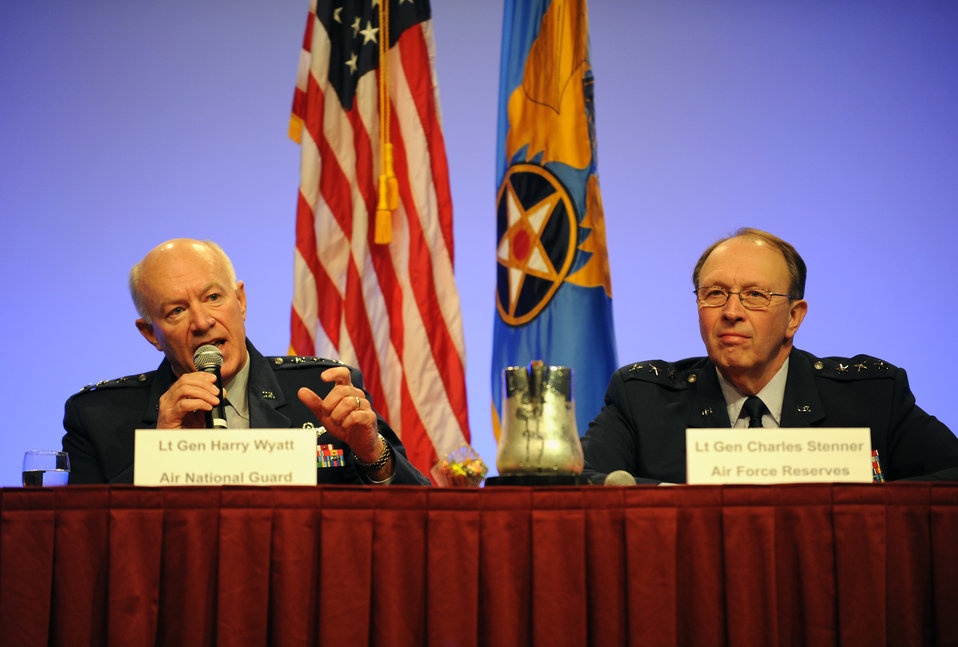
Generals discuss Guard, Reserve, on call Air Force

Lt. Gen. Charles E. Stenner Jr. and Lt. Gen. Harry M. Wyatt III speak about Reserve and Guard components during the Air Force Association's Air Warfare Symposium and Technology Exposition Feb. 19, 2010, at the Rosen Shingle Creek Hotel in Orlando, Fla. General Stenner is the Air Force Reserve Command commander, and General Wyatt is the Air National Guard director.